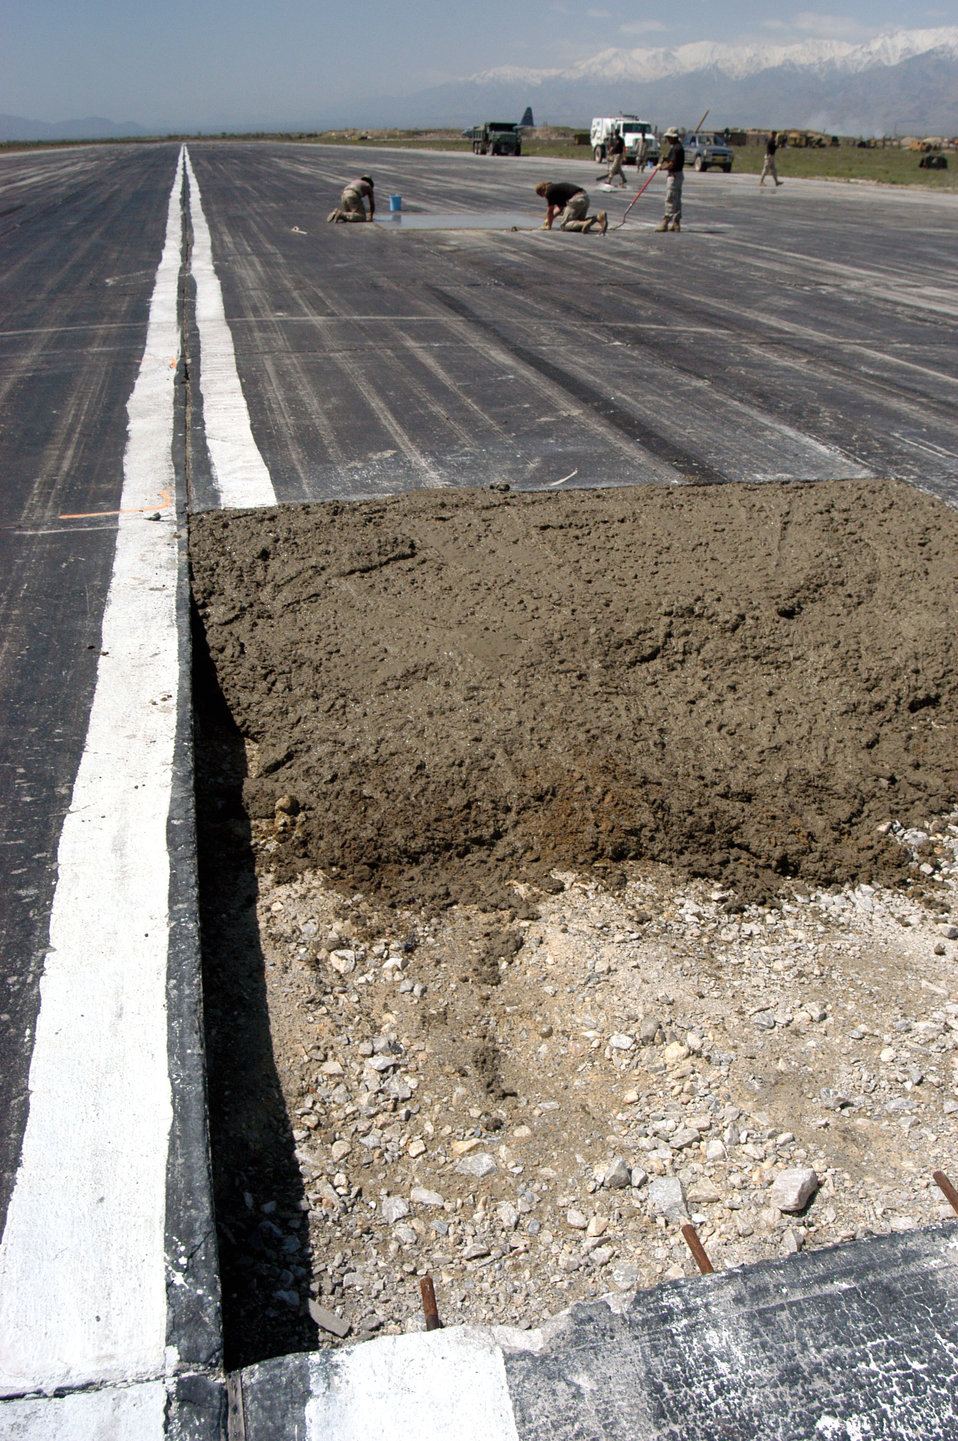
Patch work

OPERATION ENDURING FREEDOM (AFPN) -- Pavements and equipment operators with the 455th Expeditionary Operations Group civil engineer element at Bagram Air Base, Afghanistan, work on the active runway as part of a $2.3 million airfield repair project. The project is scheduled to continue until October.